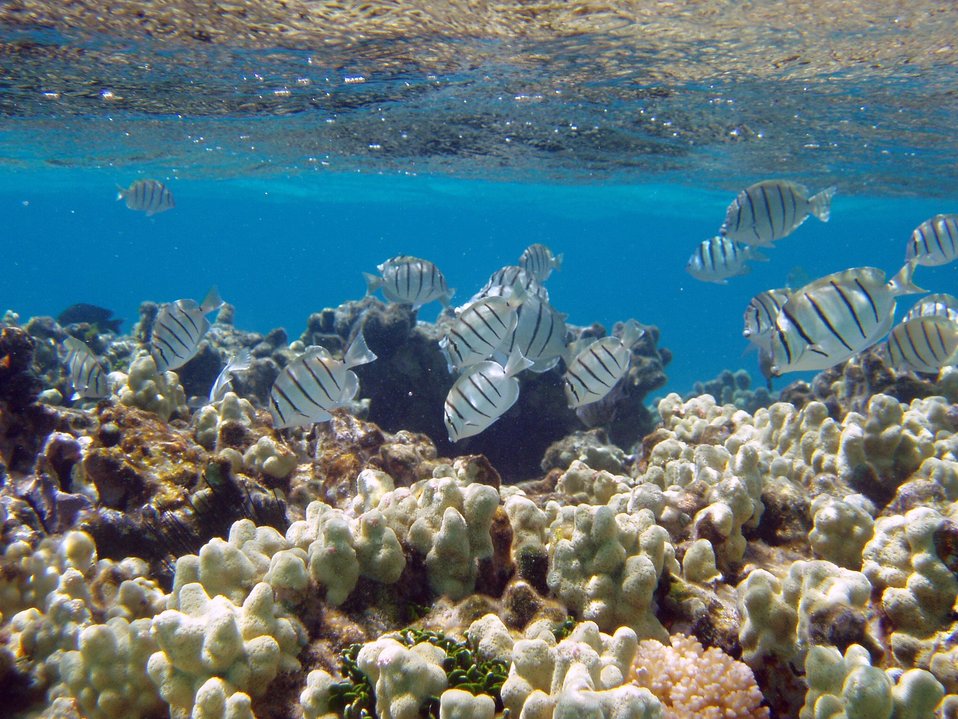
Manini or convict tangs amongst finger coral in shallow water.